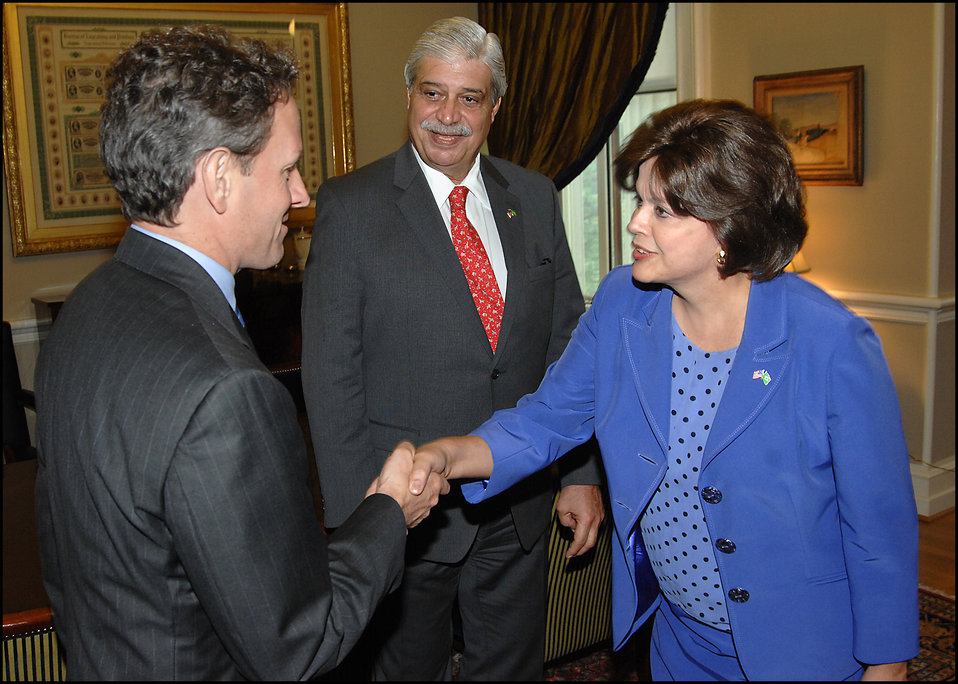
Brazilian Minister of the Presidency Dilma Rousseff

On July 21, 2009, Secretary Geithner meet with Brazilian Minister of the Presidency Dilma Rousseff.